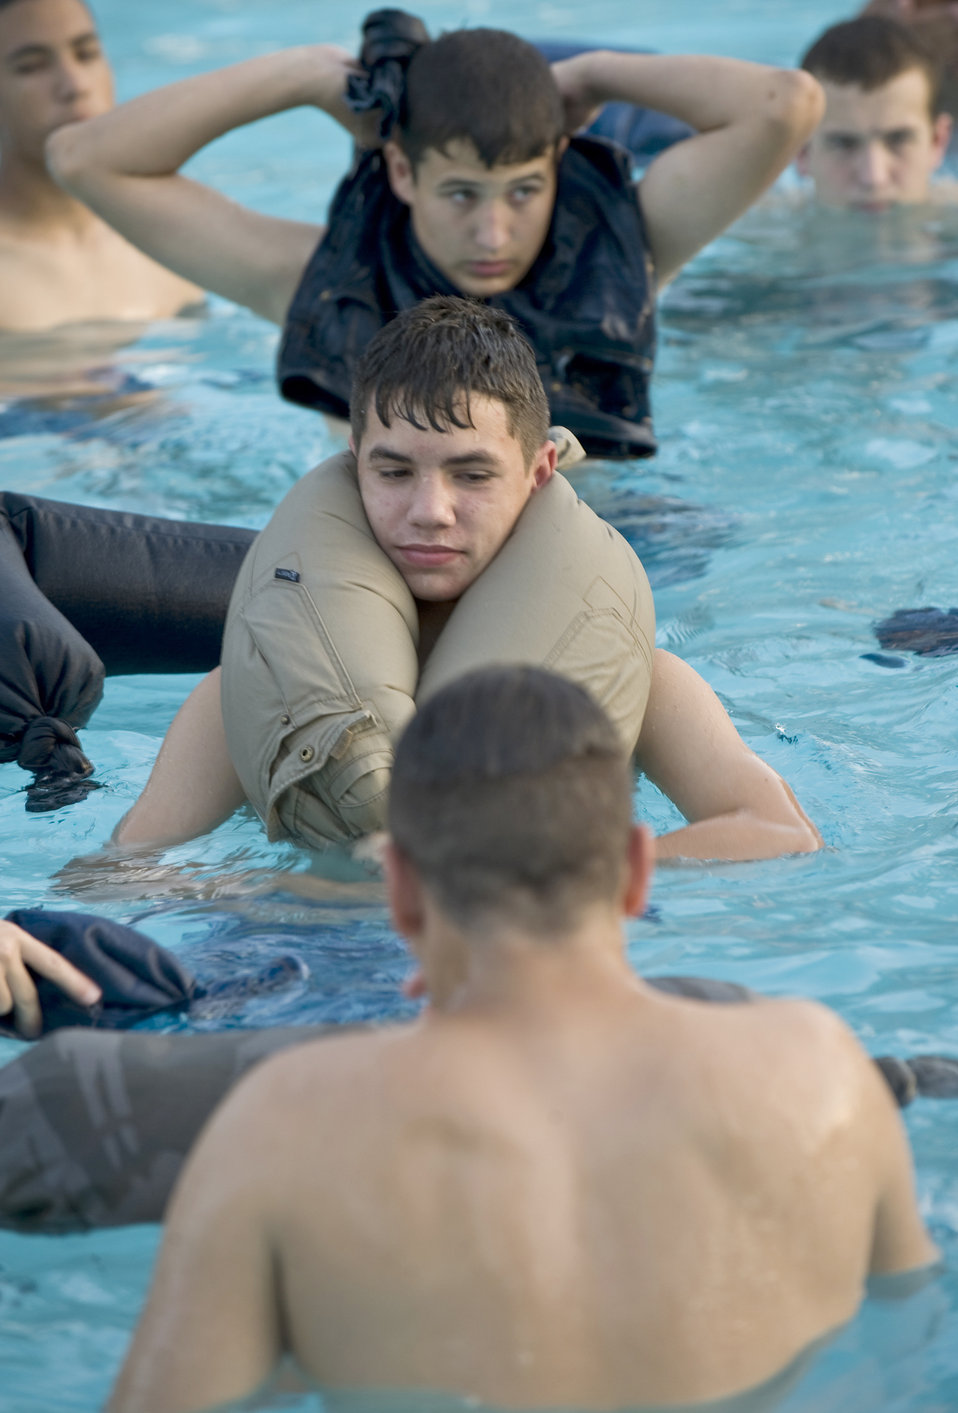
Barksdale hosts CAP Cadet Encampment

Civil Air Patrol cadets practice using pants as an improvised floatation device during a water survival course hosted by 2nd Operations Support Squadron Survival, Evasion, Resistance and Escape specialists July 21, 2010, at Barksdale Air Force Base, La. The course was part of the annual CAP Louisiana Wing Cadet Encampment held here July 15 through 25.